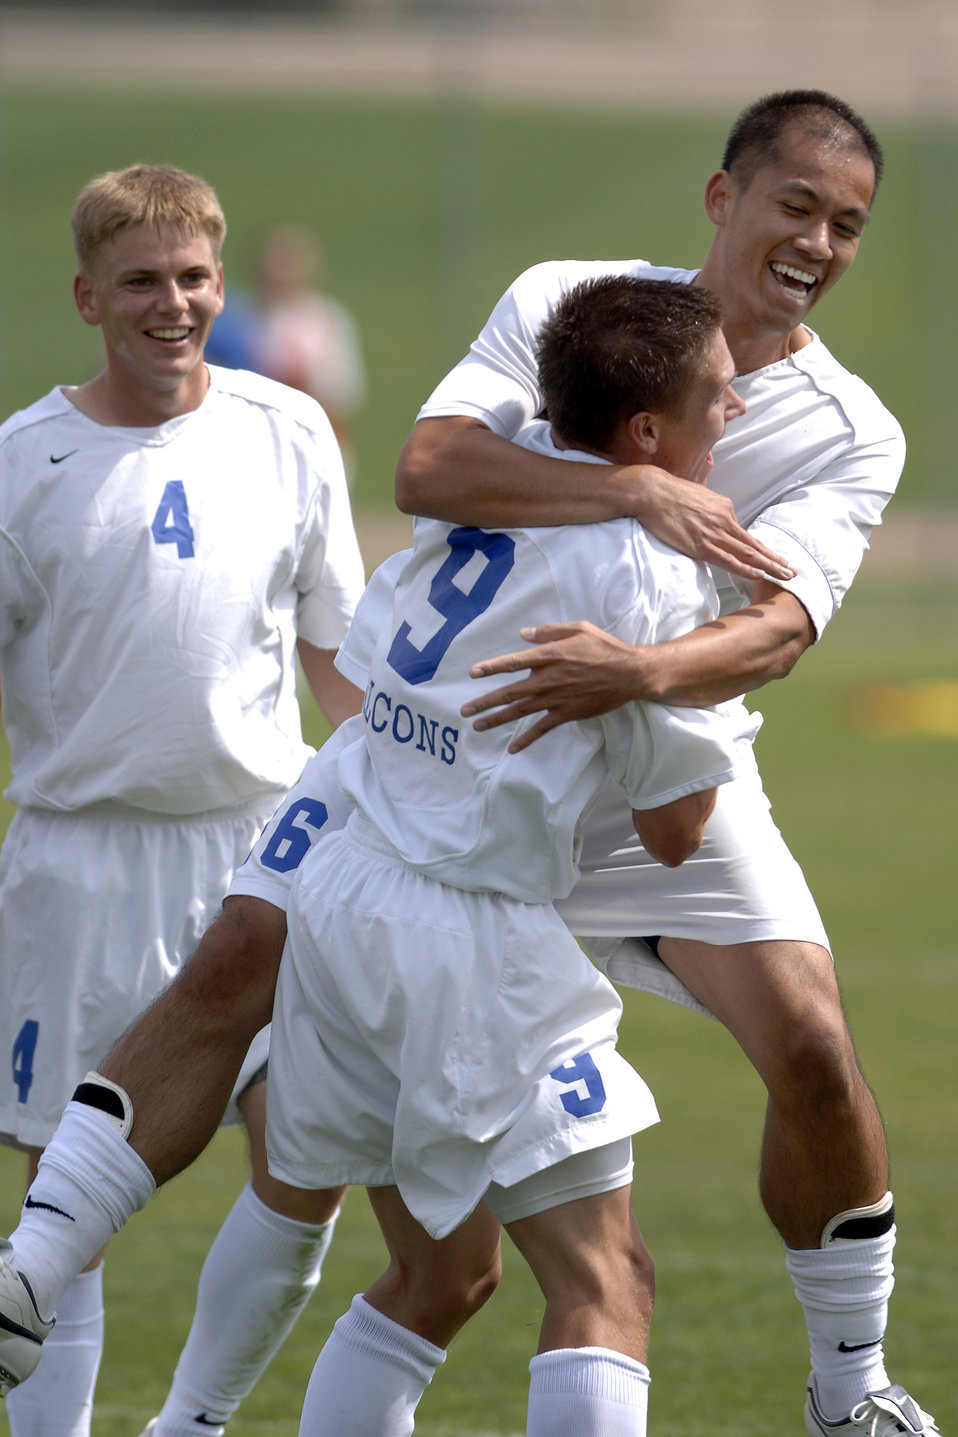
Falcons shut out St. Francis in soccer action

Freshman Kyle Schafer (9) celebrates after his first career goal as Air Force posts its second consecutive shutout with a 1-0 victory over St. Francis University in men's soccer action Sept. 9 at the U.S. Air Force Academy Cadet Soccer Stadium in Colorado Springs, Colo. With the victory, Air Force improved to 2-2 this season, while St. Francis fell to 1-3.